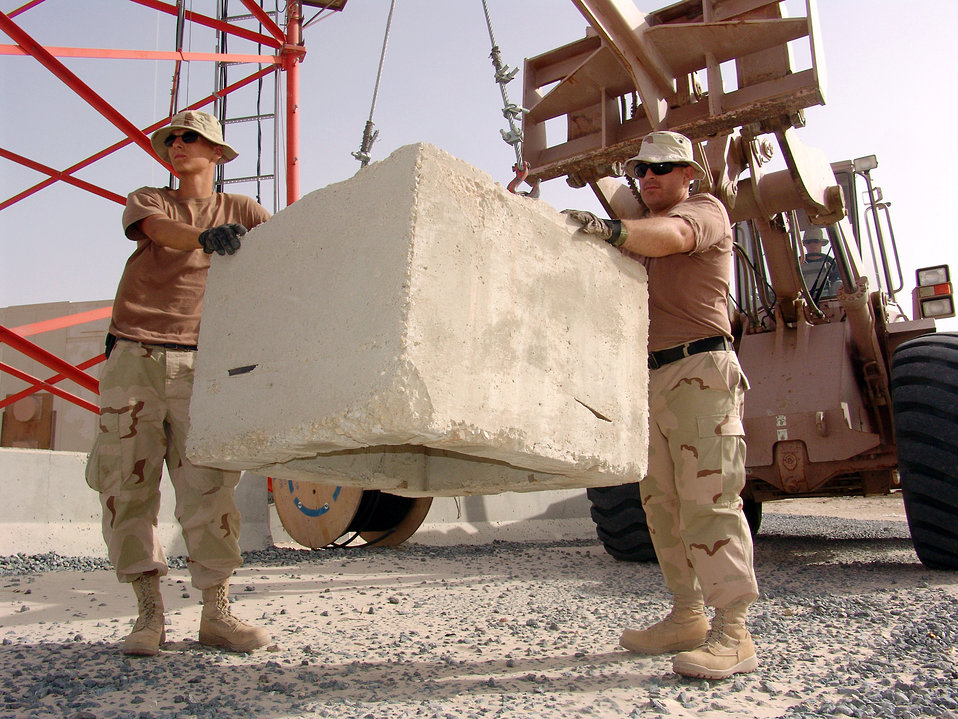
Operation IRAQI FREEDOM

SOUTHWEST ASIA -- Airman 1st Class Steven Owen (left) and Tech Sgt. Adam Robert help guide forklift operator Airman 1st Class John Voplicelli as he moves a cable junction box to a communications tower for a land mobile radio systems upgrade. All three Airmen are heavy equipment specialists deployed to the 386th Expeditionary Civil Engineer Squadron from Misawa Air Base, Japan.